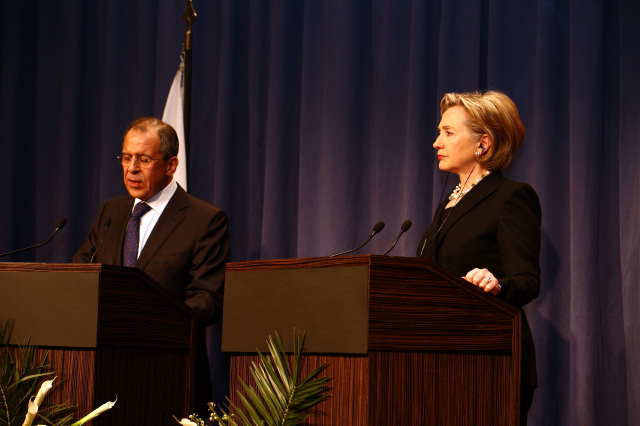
Press Conference With Russian Foreign Minister

Press conference after dinner meeting between U.S. Secretary of State Hillary Rodham Clinton and Russian Foreign Minister Sergey Lavrov in Geneva, Switzerland March 6, 2009.